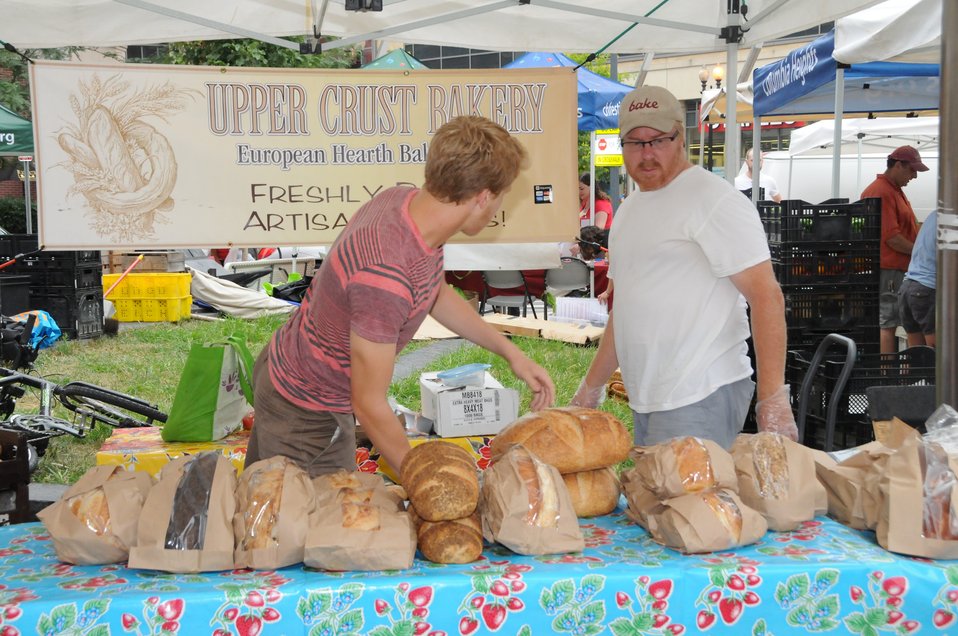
Vendors from Upper Crust Bakery

Vendors at the Columbia Heights Community Marketplace.